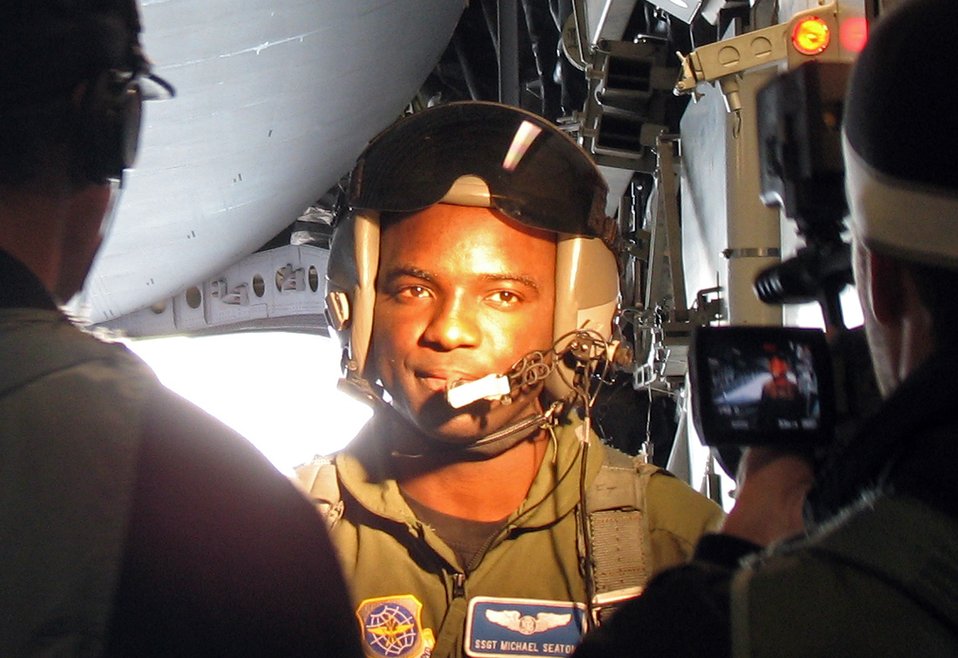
Air Force ads to feature Charleston Airmen

Staff Sgt. Michael Seaton is among the Airmen from Charleston Air Force Base, S.C., who are being feature in an upcoming Air Force advertising campaign, filmed Feb. 9 by GSD&M Advertising. Sergeant Seaton is a loadmaster assigned to the 17th Airlift Squadron.